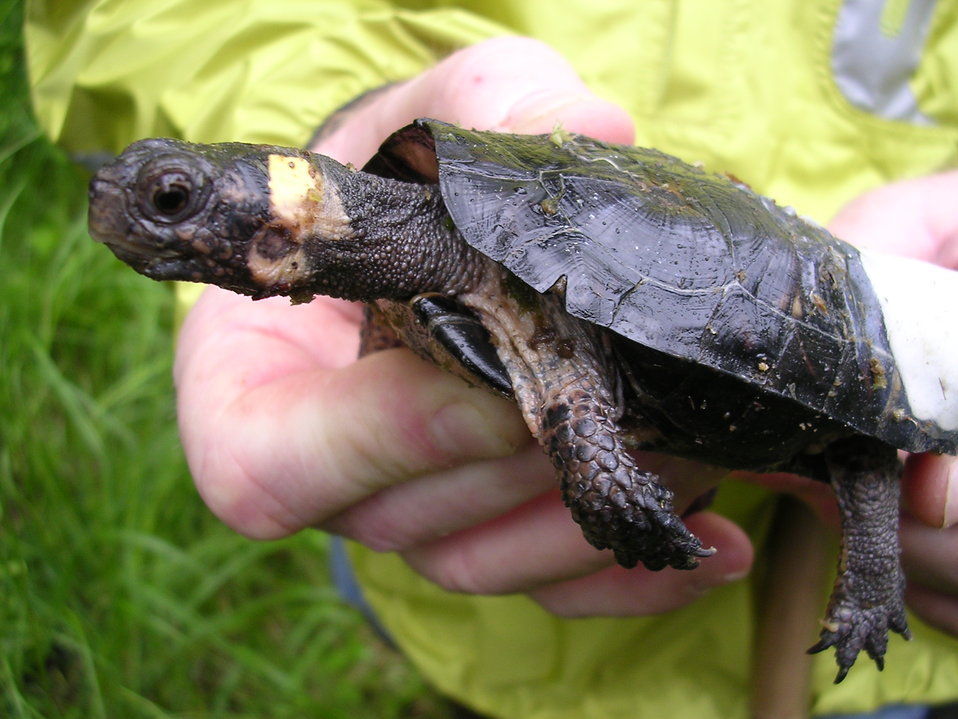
Bog turtle with affixed radio transmitter

bog turtle; Endangered species; Reptiles; similarity of appearance; Georgia; Blue Ridge Physiographic province; Mountains bog; radio telemetry;A captive-reared bog turtle is released into the wild, with affixed radio transmitter.